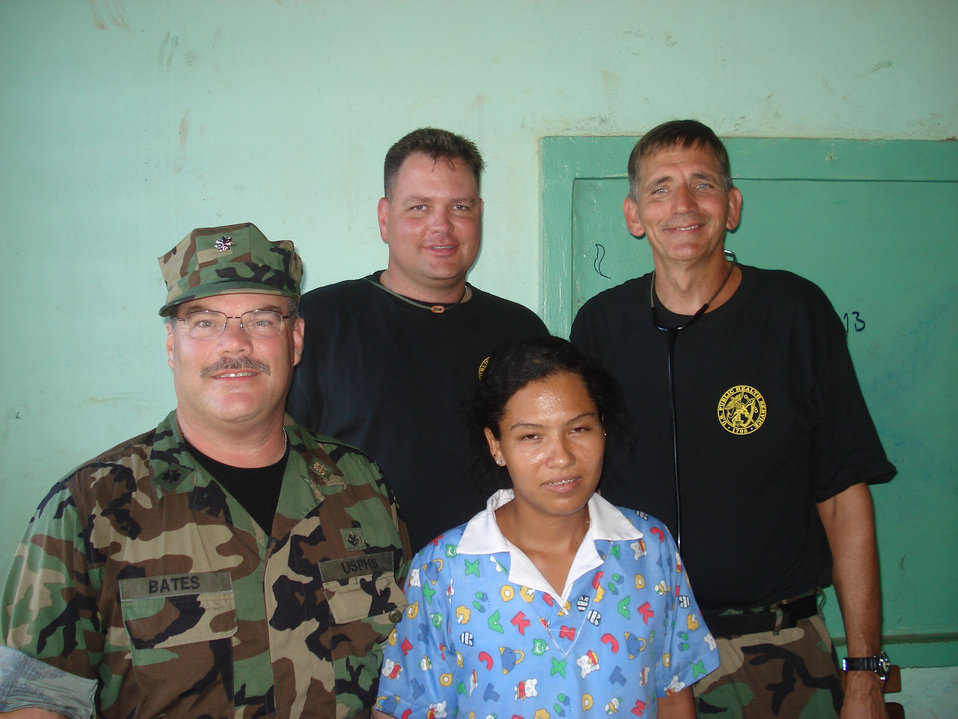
This image depicts United States Public Health Service (USPHS) officers posing with a patient at a remote clinic in Nicaragua during Operation Continuing Promise (CP), 2008.